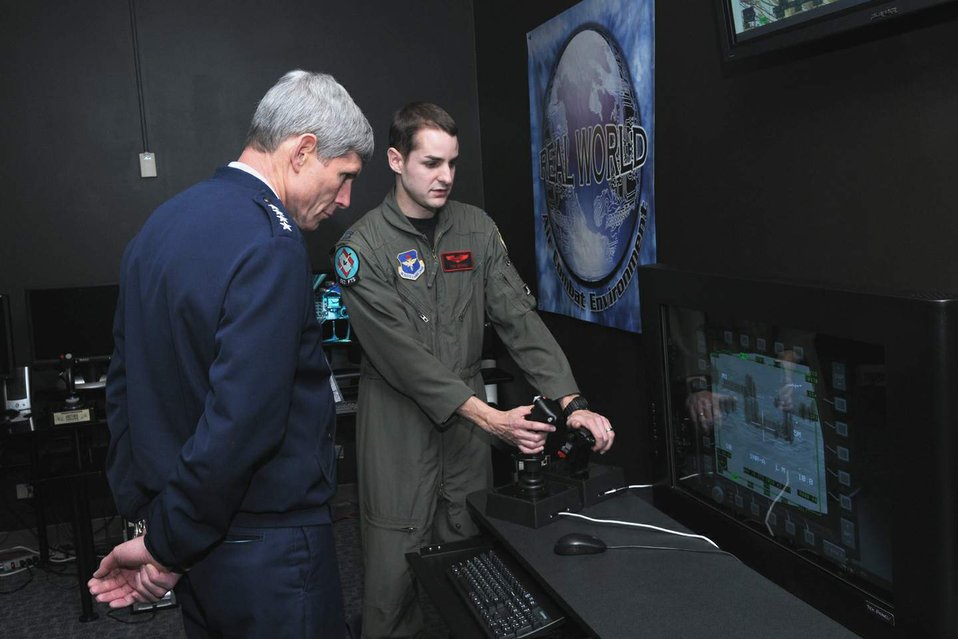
CSAF visits UAS class

Air Force Chief of Staff Gen. Norton Schwartz observes as Capt. Tom Moore, a Unmanned Aircraft System Fundamentals Course flight commander, demonstrates a training position in the Simulation Development Laboratory Feb. 19 during the general's visit to the 563rd Flying Training Squadron at Randolph Air Force Base, Texas.